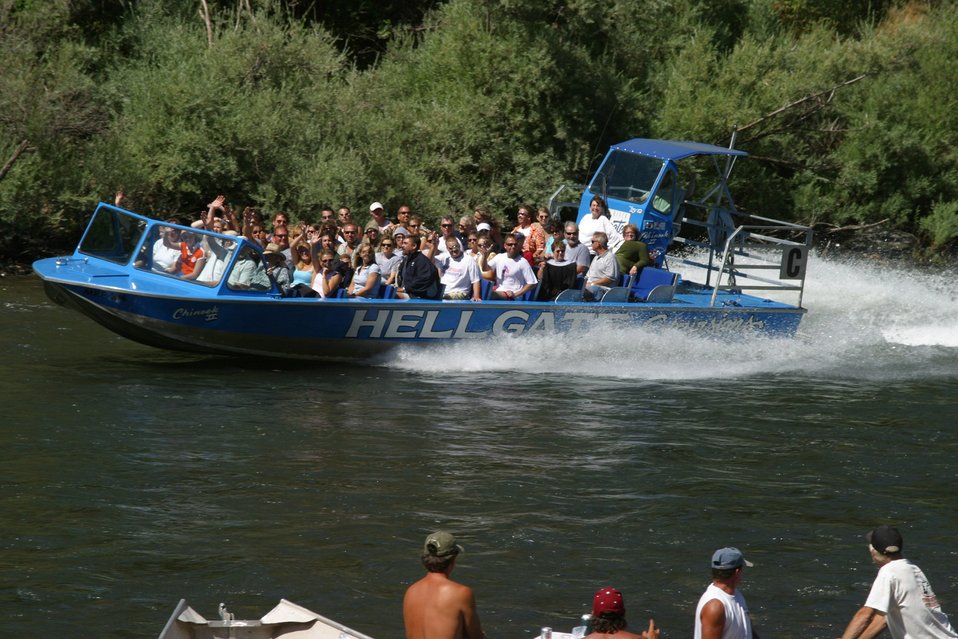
Jet boat pass Hog Creek.